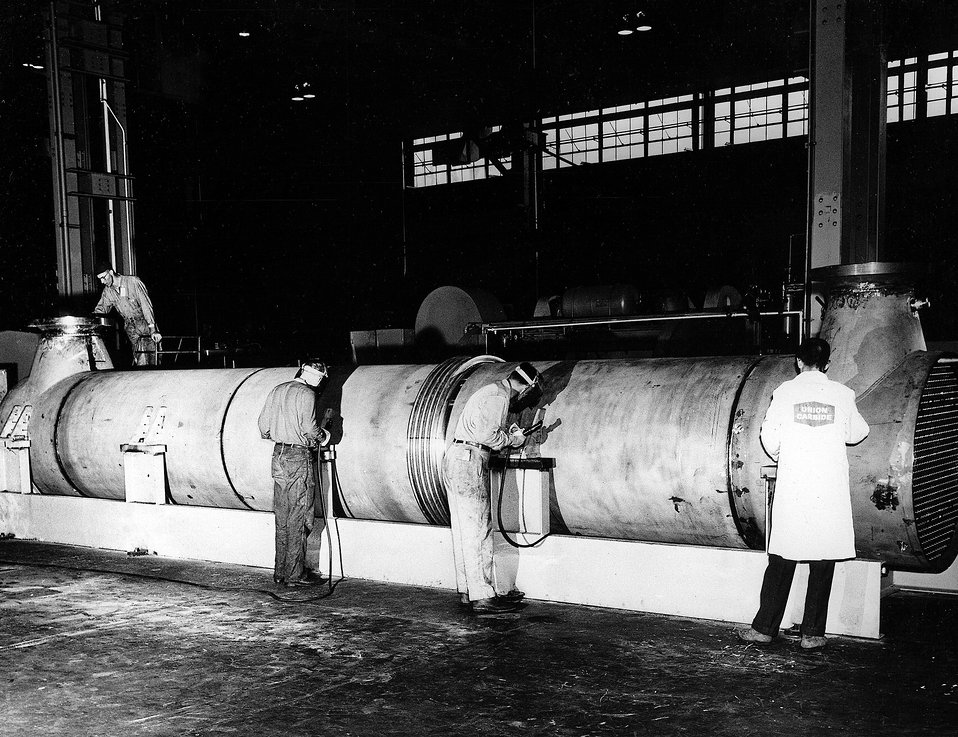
A stainless steel heat exchanger capable of elevating the temperature of air to 1200 degrees F. will be used in the development of a combuster for the supersonic air transport ship. Circa 1967.